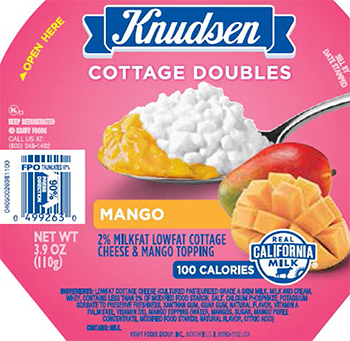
RECALLED – Cottage Cheese products

May 17, 2014 – Product Recall – Kraft Foods Group Voluntarily Recalls Select Cottage Cheese Products Due to Out-of-Standard Storage Temperatures
Certain Knudsen Cottage Cheese, Breakstone’s Cottage Cheese, Simply Kraft Cottage Cheese and Daily Chef Cottage Cheese Products Included in the Recall
.